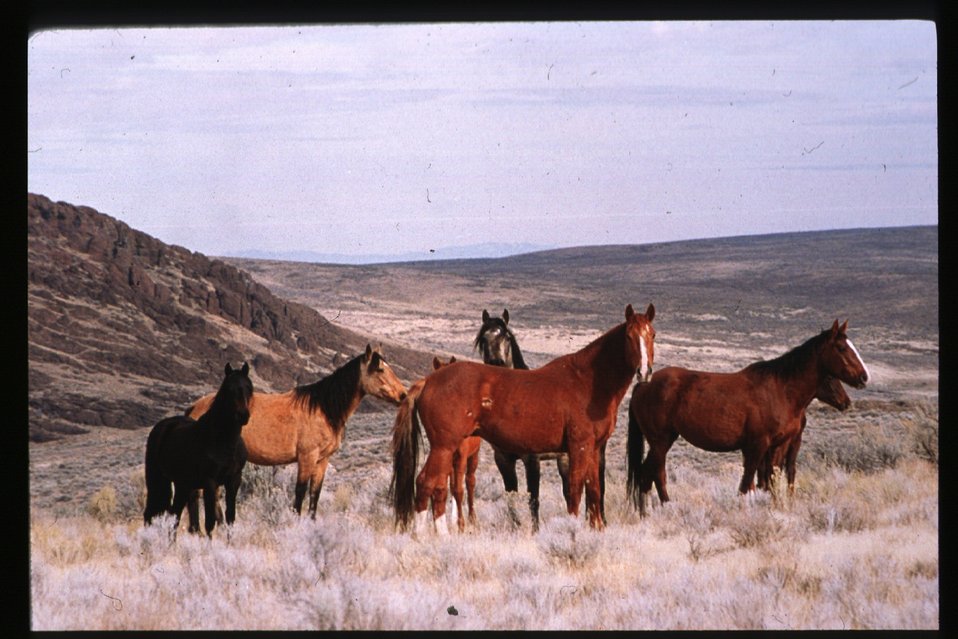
Wild Horse and Burro Adoption Program Gathering Roundup Corral Four Rivers Field Office LSRD Lower Snake River District